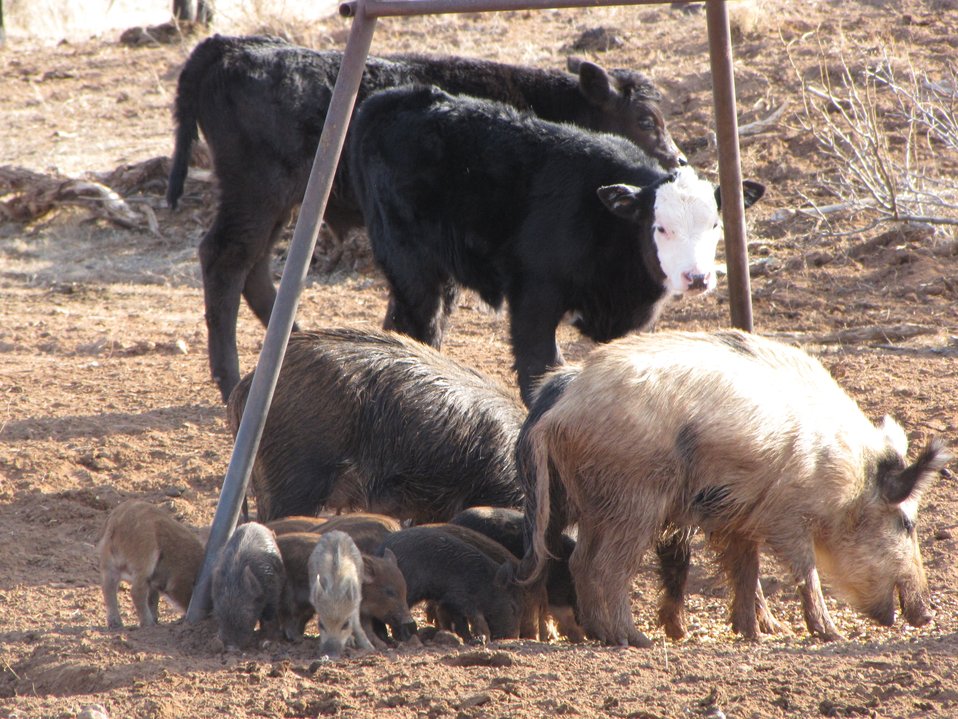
Feral swine sow with piglets. Invasive feral swine are prolific breeders. Sows have approximately 1½ litters per year with each litter averaging 5 to 6 piglets. Females can become sexually mature at 6 to 8 months of age.